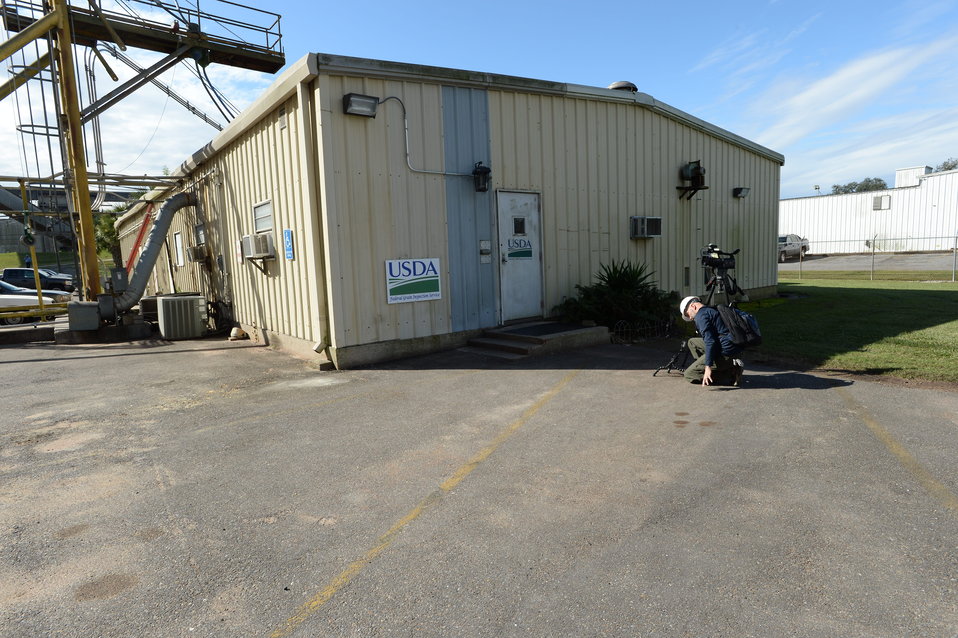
The entrance to the U.S. Department of Agriculture (USDA) Grain Inspection, Packers and Stockyards Administration (GIPSA) Federal Grain Inspection Service (FGIS) laboratory in New Orleans, LA on Tuesday, Nov. 19, 2013.